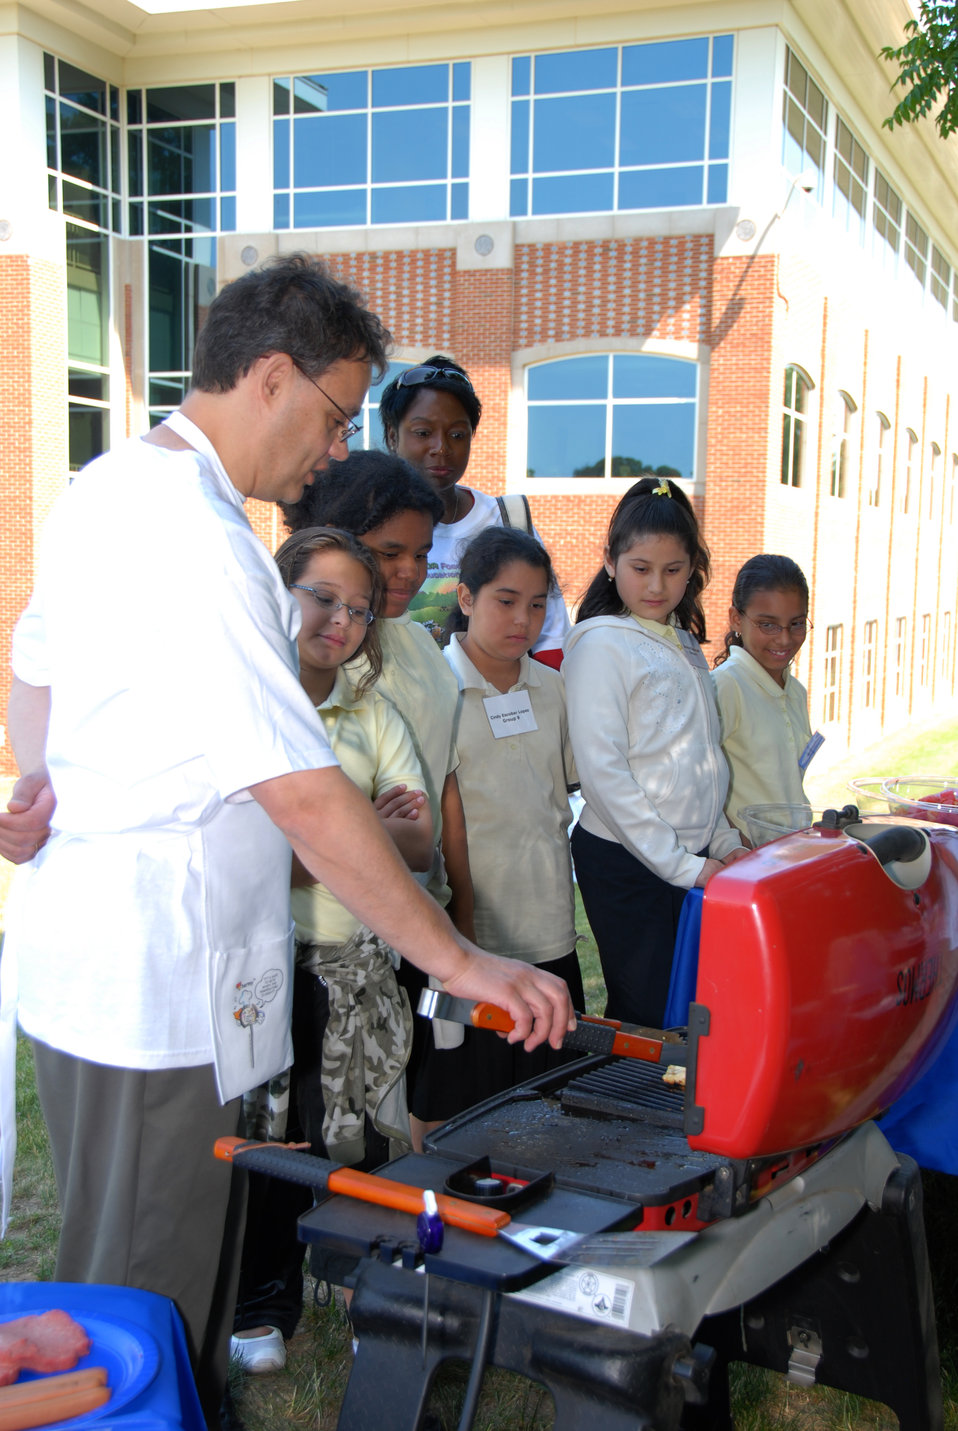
U.S. Department of Agriculture's (USDA) Food Safety and Inspection Service (FSIS) annually hosts a food safety camp that provides children with hands-on instruction about the dangers of foodborne illness and how to prevent it. This Food Safety camp was held at the USDA Beltsville, Maryland facility on May 23, 2007. The students learned the best method to ensure that grilled hamburgers and barbecued chicken are cooked to a safe minimum internal temperature that destroys bacteria and is safe to eat is by using a food thermometer.